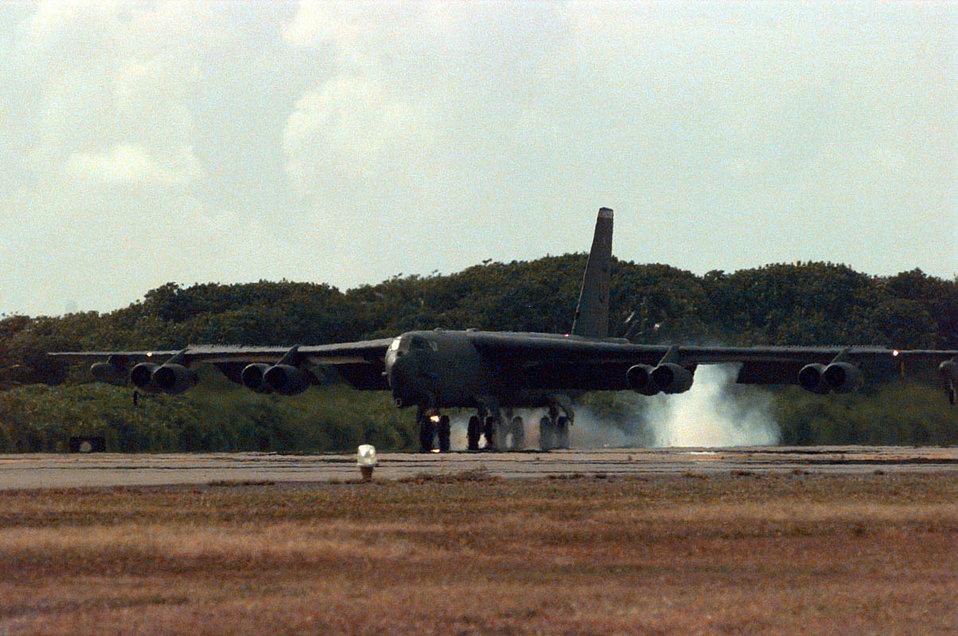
Buff landing

OPERATION SOUTHERN WATCH -- A B-52 from the 96th Bomber Squadron, Barksdale Air Force Base, La., arrives at Diego Garcia as part of the Second Air Expeditionary Group. Air Combat Command's B-52 is a long-range, heavy bomber that can perform a variety of missions. The bomber is capable of flying at high subsonic speeds at altitudes up to 50,000 feet. It can carry nuclear or conventional ordnance with worldwide precision navigation capability.